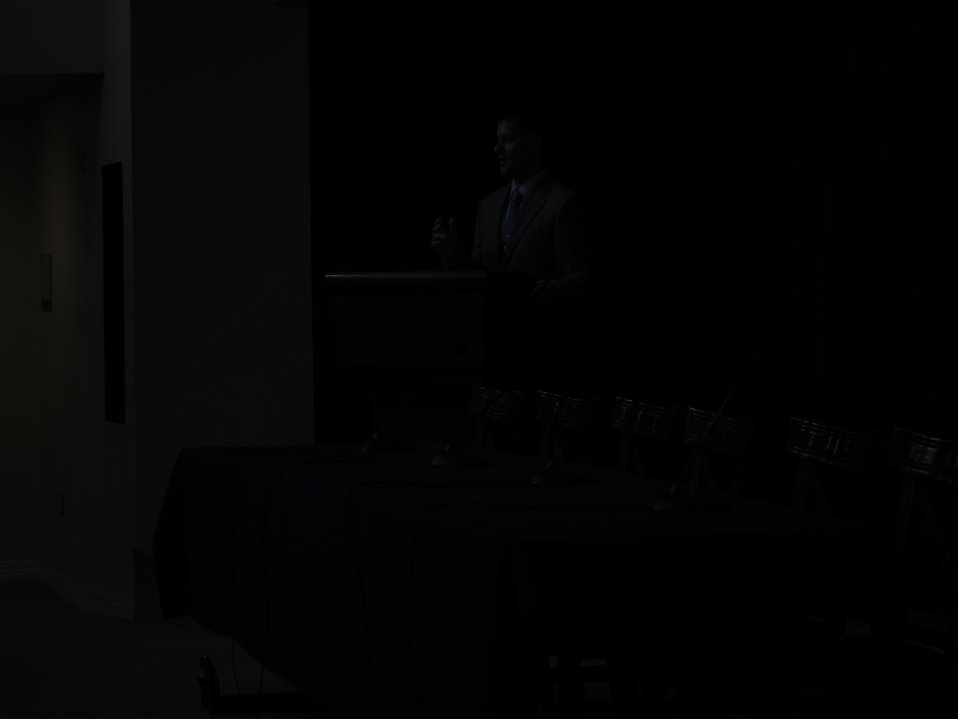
WH 2012 World Hepatitis Day Event